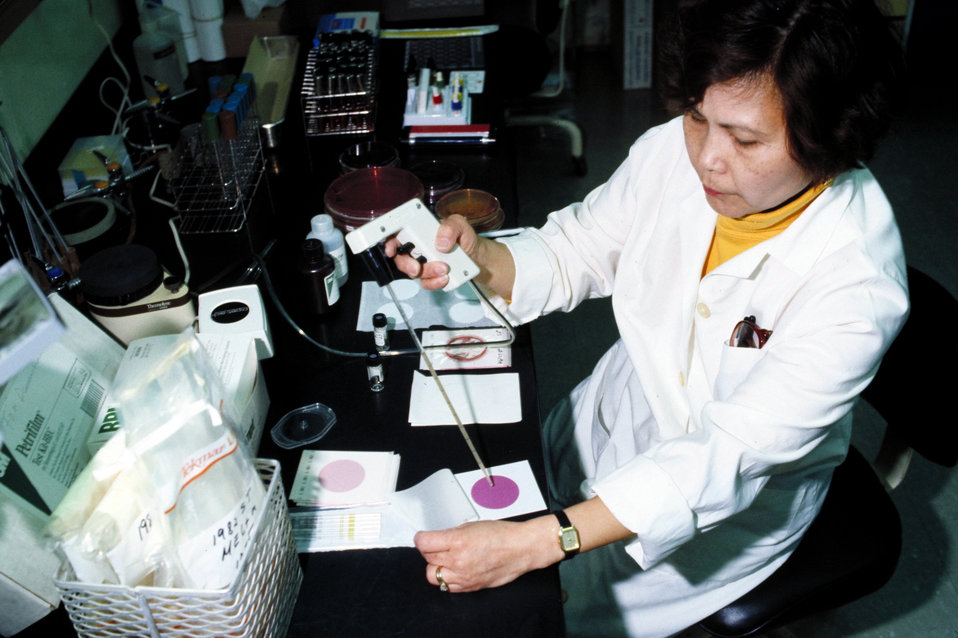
U.S. Department of Agriculture’s (USDA) Food Safety Inspection Service (FSIS) scientist conducts microbiological tests for the presence of specific pathogenic microorganisms in or on the product on March 15, 1993.